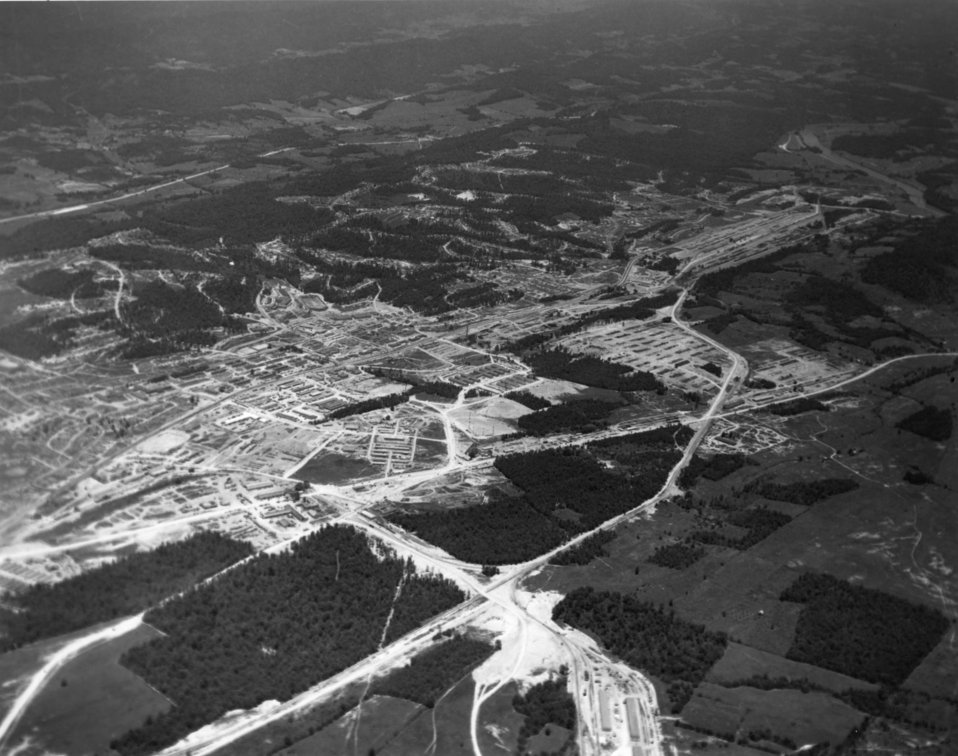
Aerial of Oak Ridge